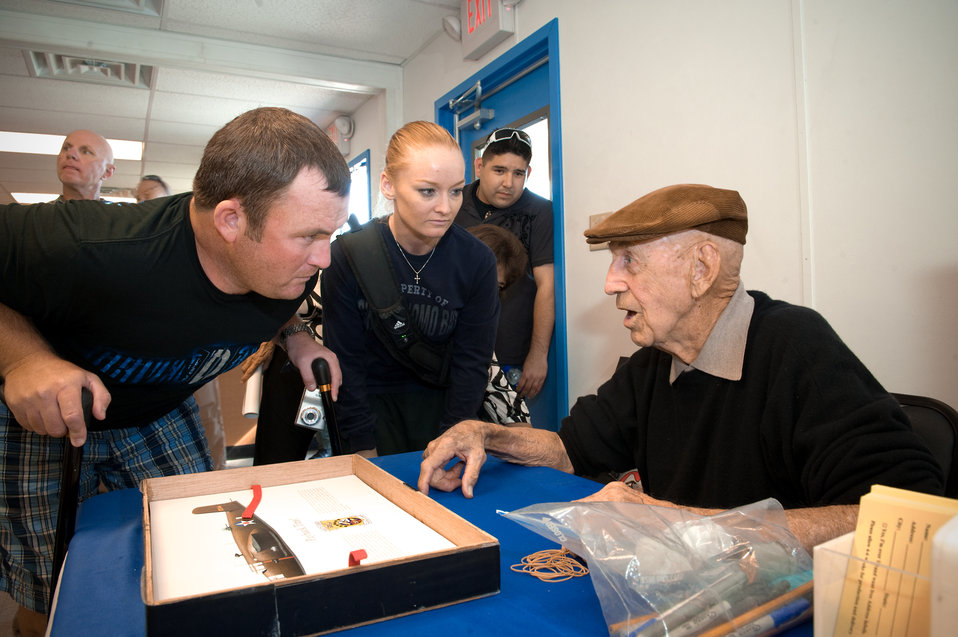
Warrior Flight

Air Force Staff Sgt. Richard Pollock (left) and Army National Guard Sgt. Kisha Makerney asks (ret.) Lt. Col, Dick Cole a question about the Doolittle raid on Tokyo during WWII. Cole was Col. Jimmy Doolittle's co-pilot for the historic raid. Disabled American Veterans Flight Team coordinated a flight day for wounded warriors and their family on Nov. 5, 2009. They will be flying in historic military aircraft and experimental acrobatic planes at San Antonio International Airport, Texas. Makerney a Ft. Townsend, OK native and Pollock are currently assigned to the San Antonio Military Medical Center. Col. Cole and aircrews have come here from across the region to participate in the Randolph Air Force Base Forging the Future Air Show on November 7-8.